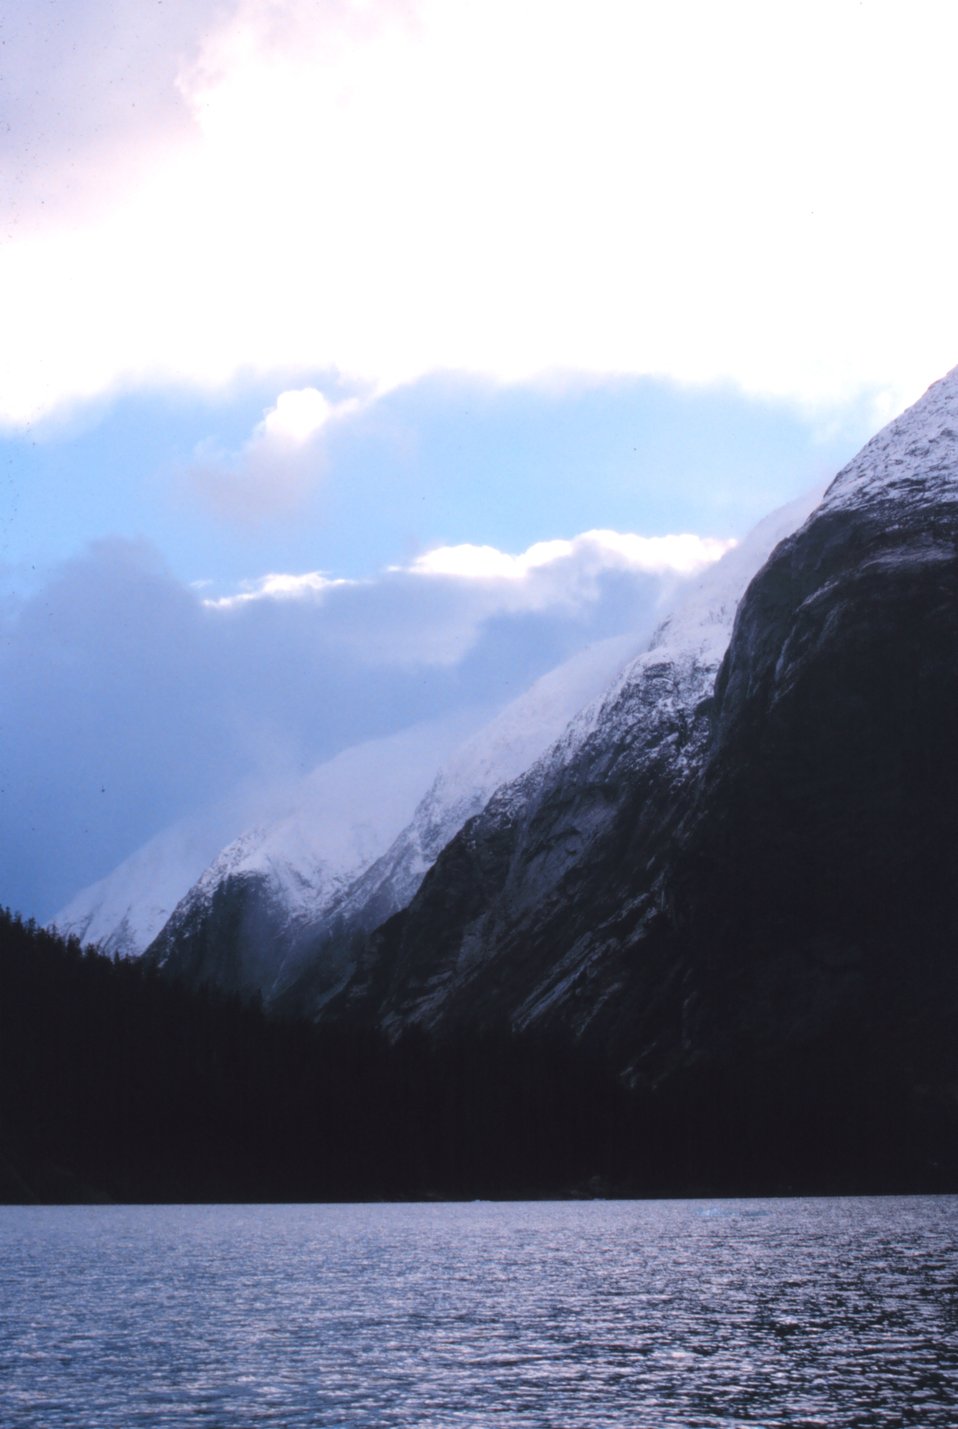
The majestic cliffs of Tracy Arm Fjord